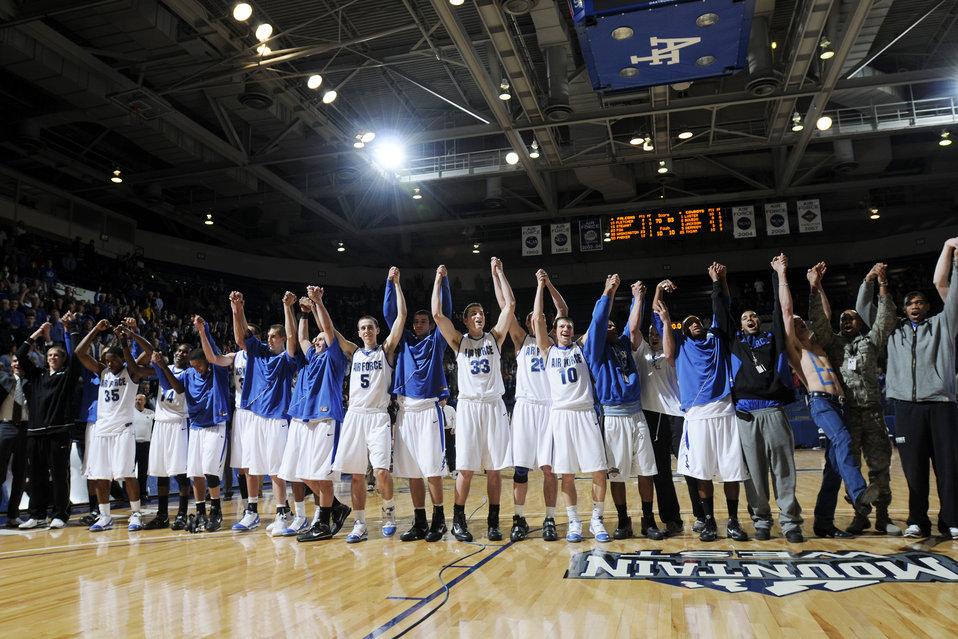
Falcons break conference streak

Members of the U.S. Air Force Academy Falcons and fans raise their hands to celebrate the win over the Wyoming Cowboys at the Academy's Clune Arena in Colorado Jan. 30, 2010. The win broke a 22-game conference losing streak for the Falcons; their first win in the Mountain West Conference since 2008.